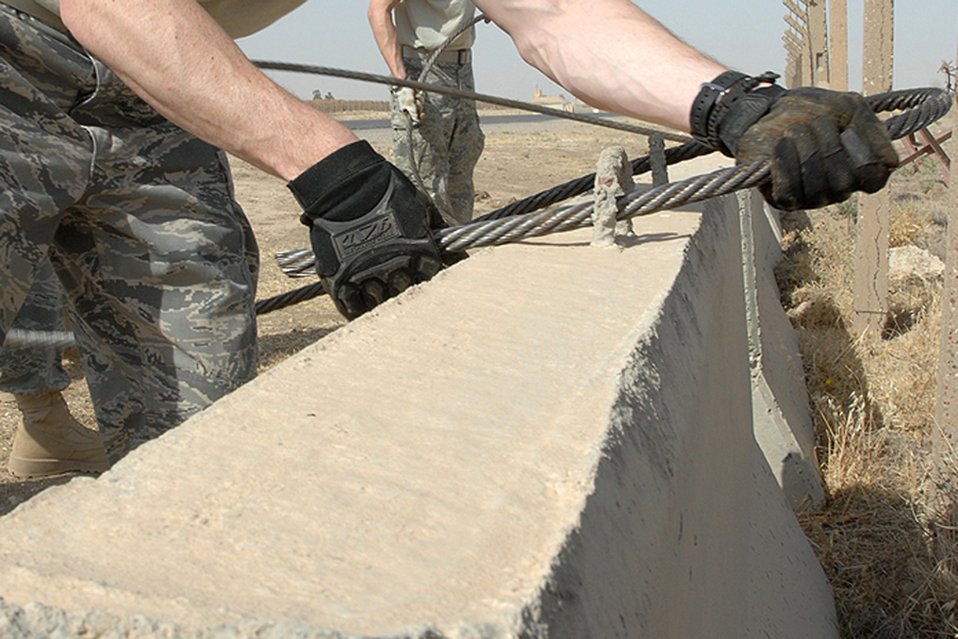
Kirkuk self-help project protects airfield assets, saves money

A volunteer weaves aircraft cables through jersey barriers June 5 at Kirkuk Air Base, Iraq. Airmen here teamed up to place barriers, cables and signs around the airfield recently, mitigating vulnerabilities and lessening safety risks. This self-help airfield security project saved an estimated $500,000 by using existing assets and volunteers.